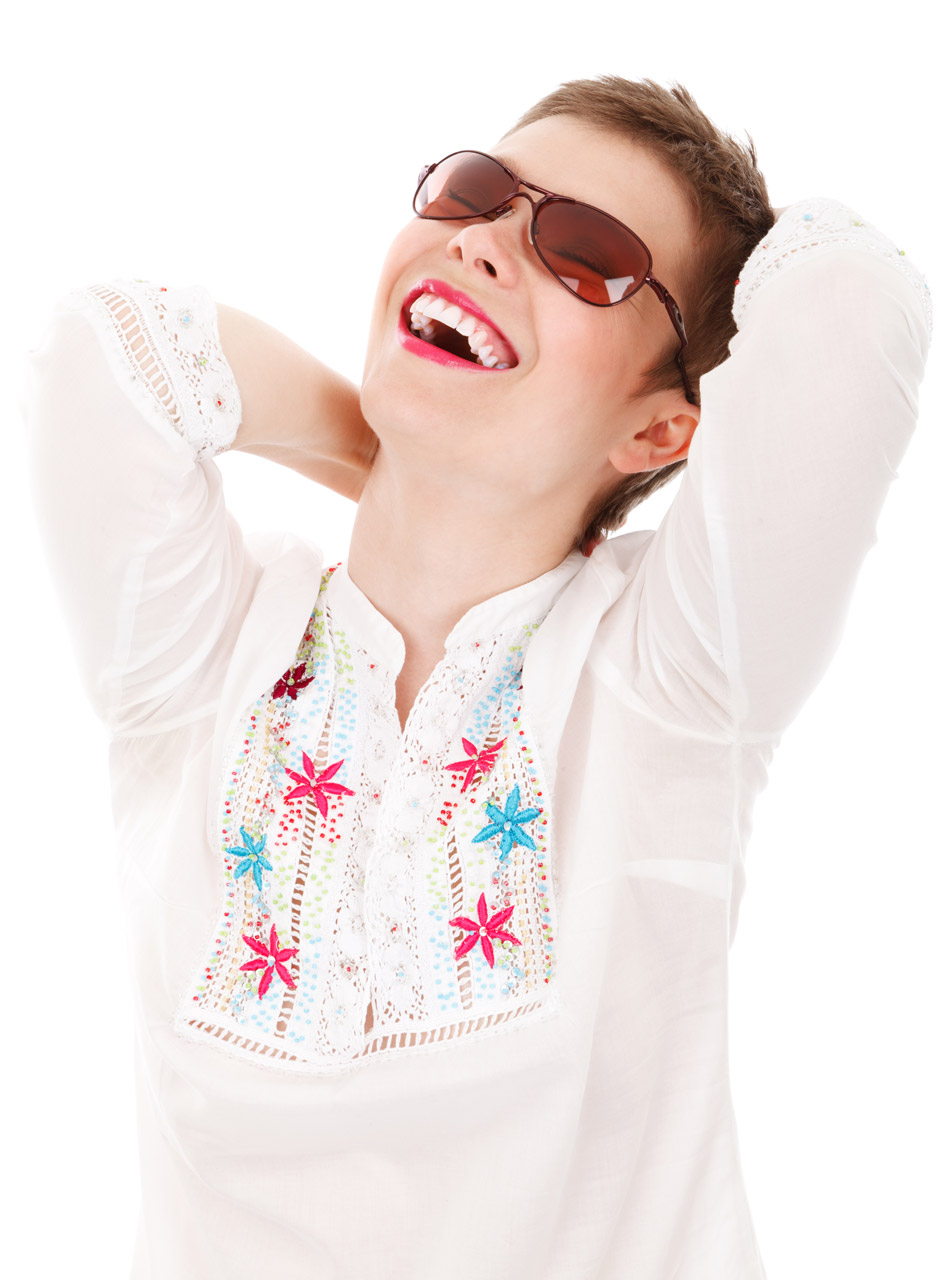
Laughing young woman wearing summer clothes isolated on white background.